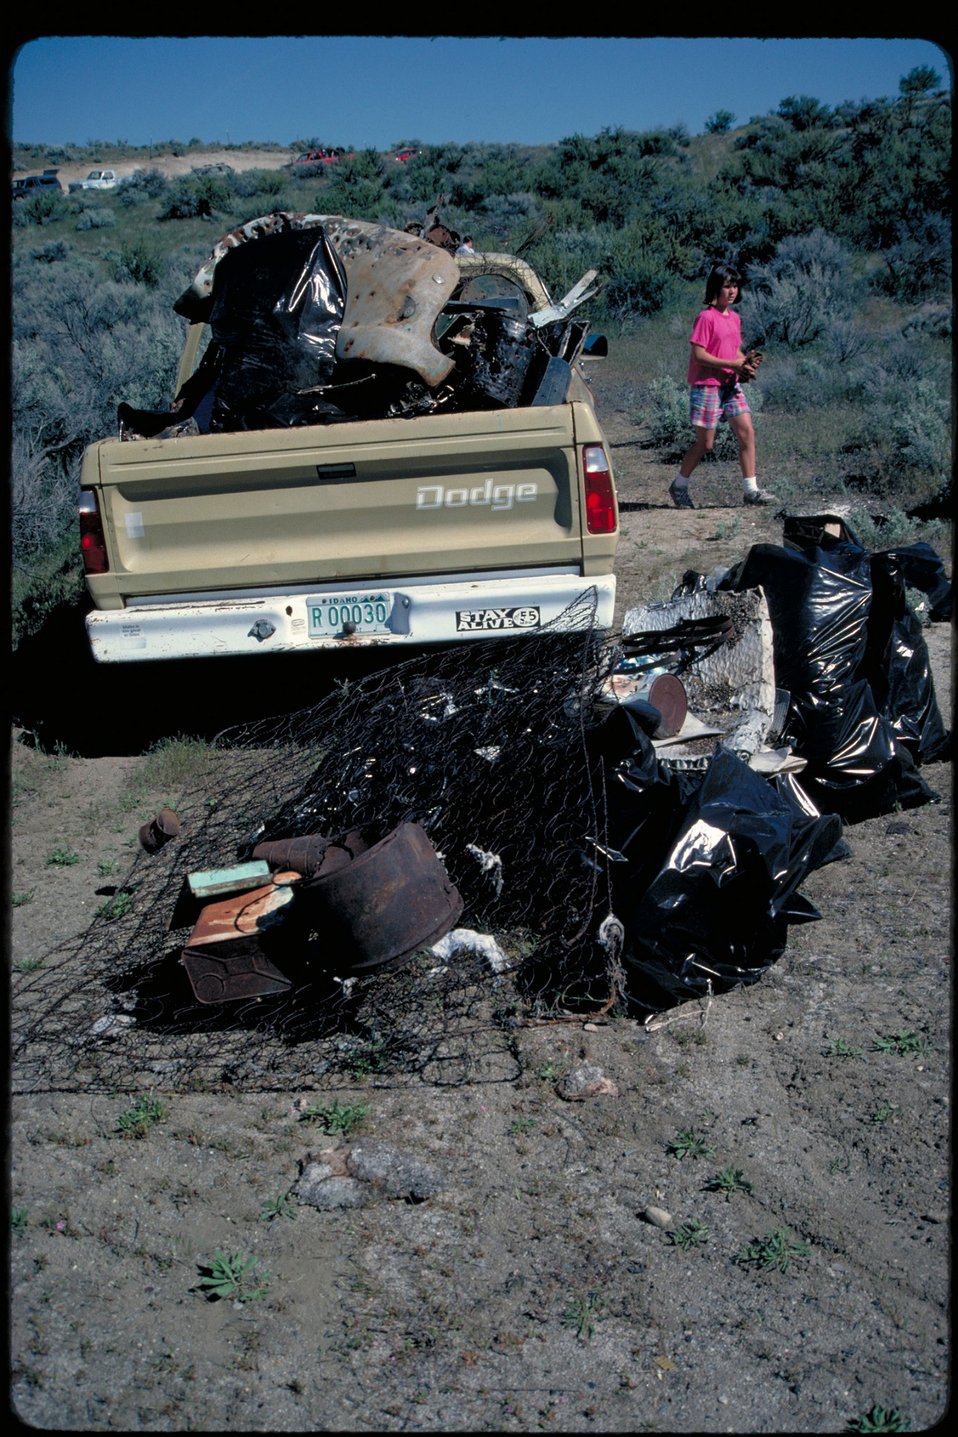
Cleanup Boise Front Four Rivers Field Office LSRD Lower Snake River District